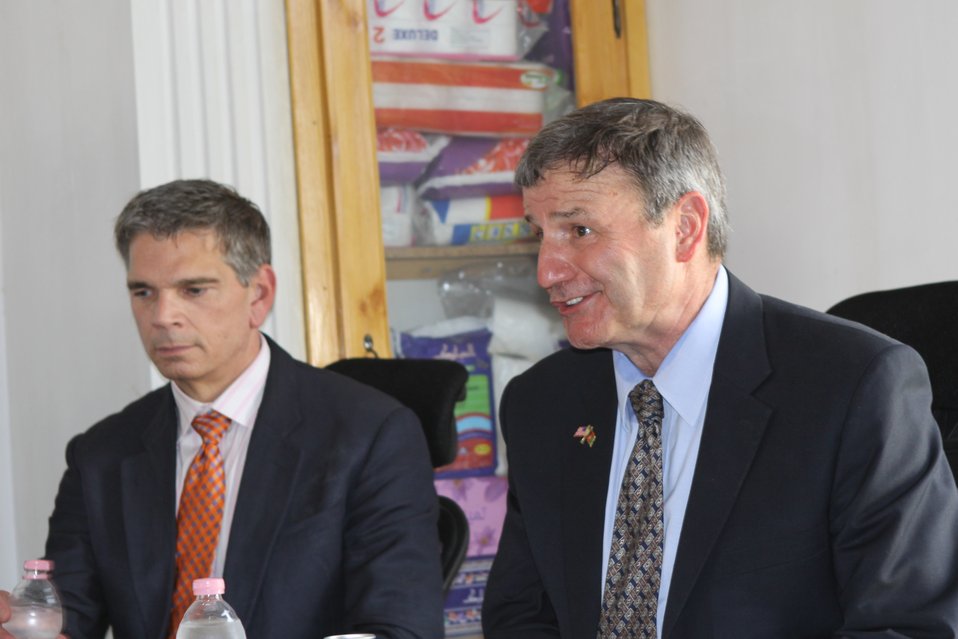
100525 Hirat Marble Conference 851